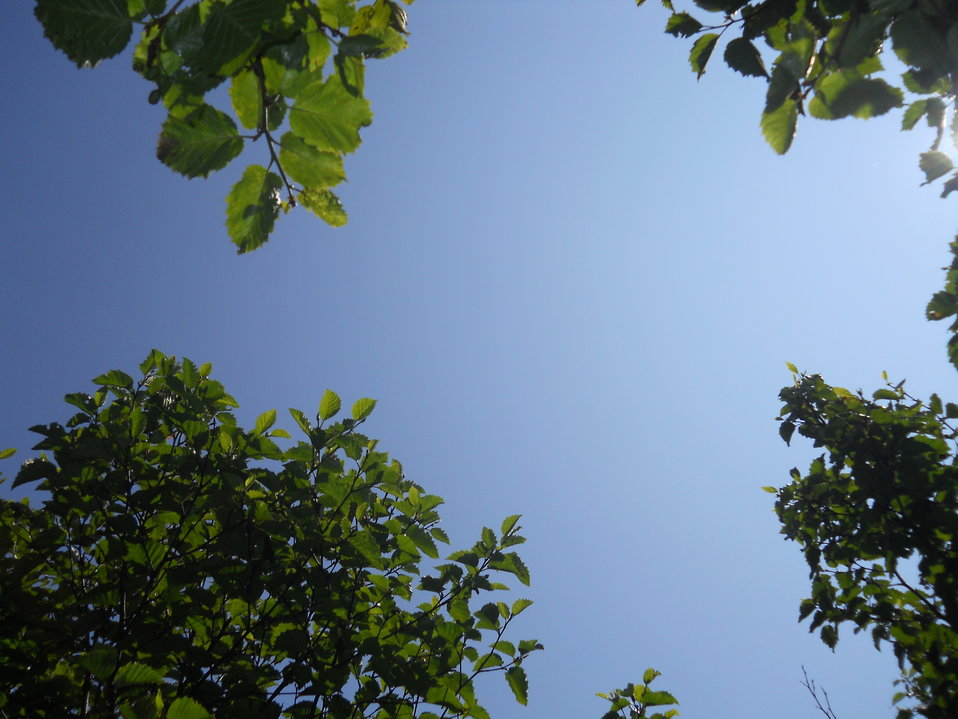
Through the Leaves

Credit: USFWS
Photo taken by a Salmon Camp participant during a nature photography activity.

Source and Contact: Kodiak National Wildlife Refuge